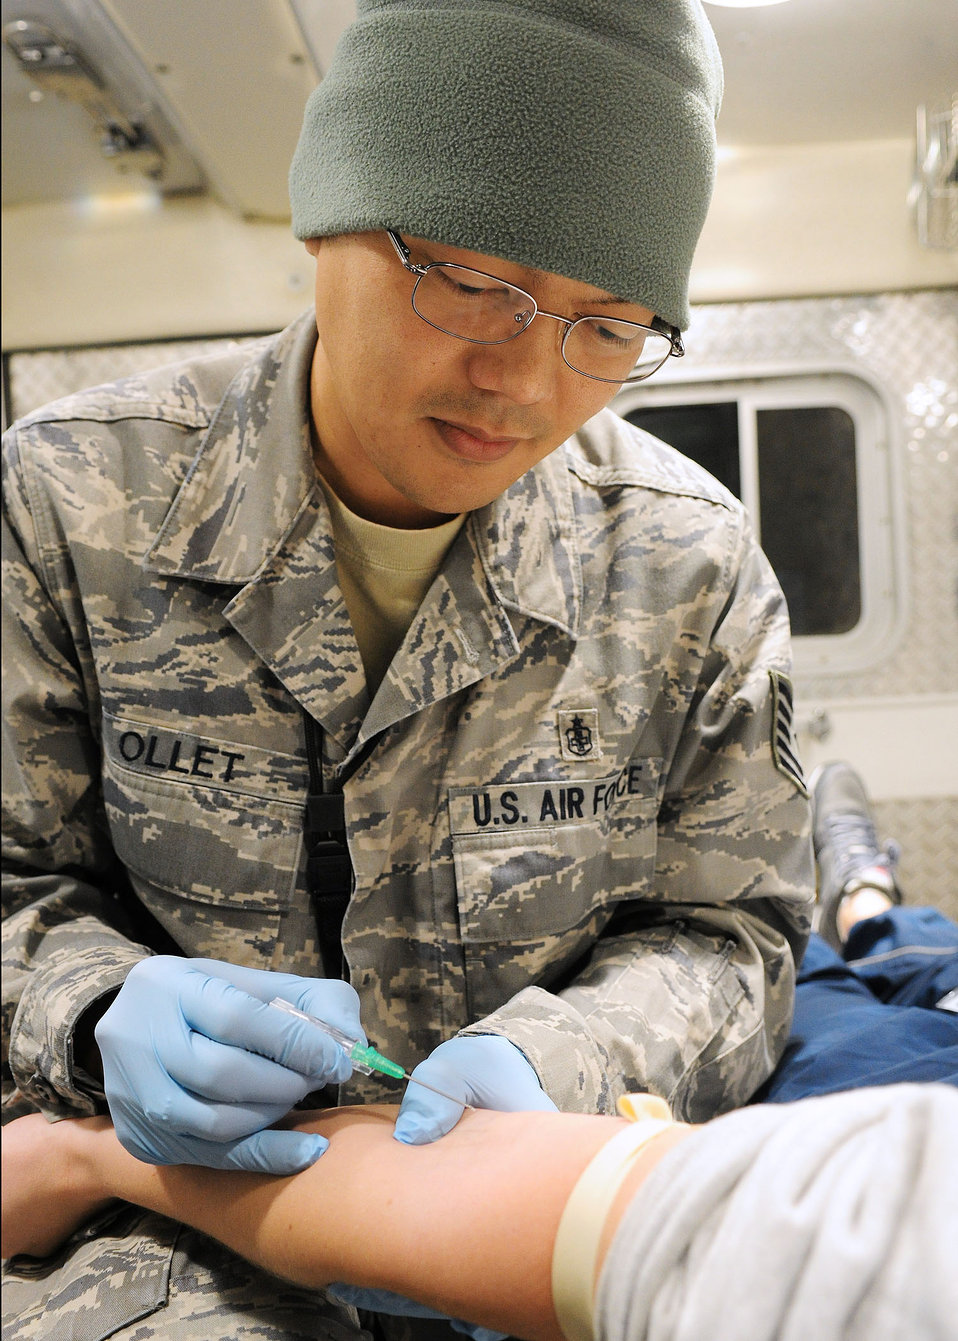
Joining forces to save a life

Tech. Sgt. Lemuel Ollet demonstrates how to put an IV in a patient's arm in the back of an ambulance Feb. 1, 2010, at the Transit Center at Manas, Kyrgyzstan. Sergeant Ollet was on duty Jan. 18, 2010 when Jamie Morris, a Peace Corps volunteer in Central Asia, was transported to the Transit Center for medical treatment after an automobile accident. Sergeant Ollet is a 376th Expeditionary Medical Group aero medical technician.